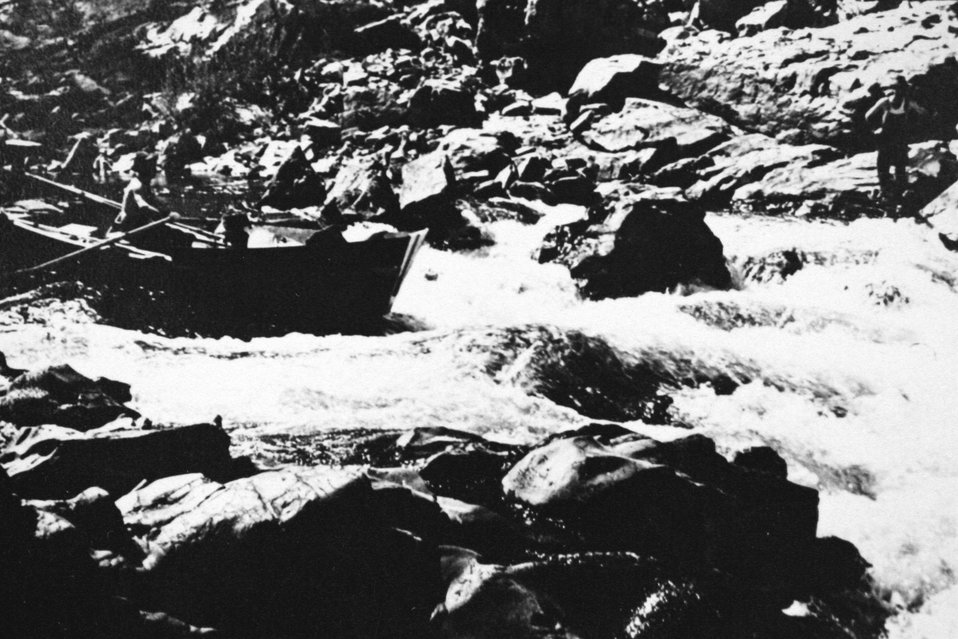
Grave Creek Falls